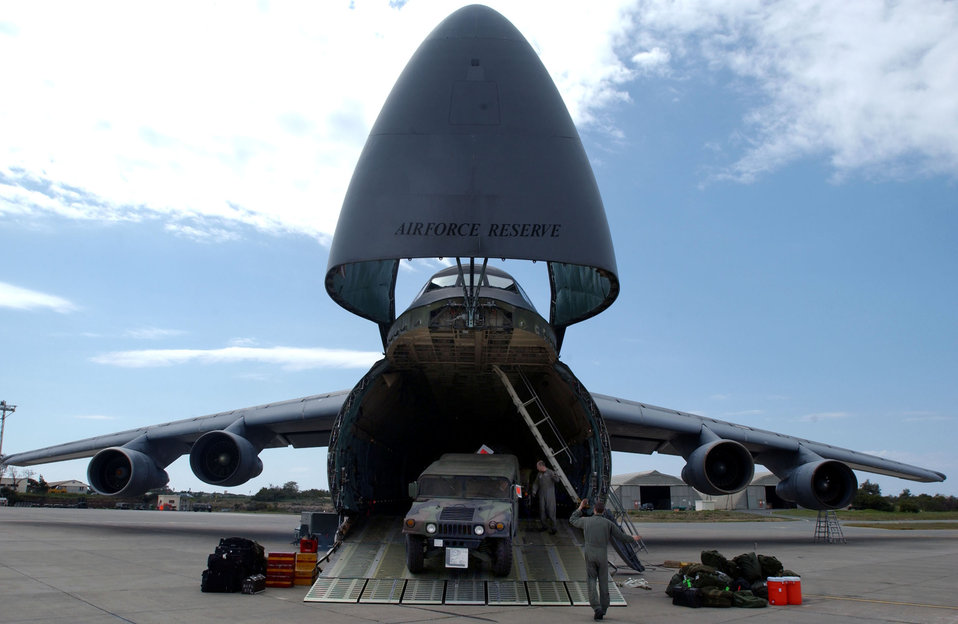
Roll out the HUMVEE

OPERATION IRAQI FREEDOM -- Senior Airman Seth Weaver, a loadmaster assigned to the 9th Airlift Squadron, Dover Air Force Base, Del., guides a HUMVEE off of a C-5 Galaxy at a forward-deployed operating location in the Mediterranean region.